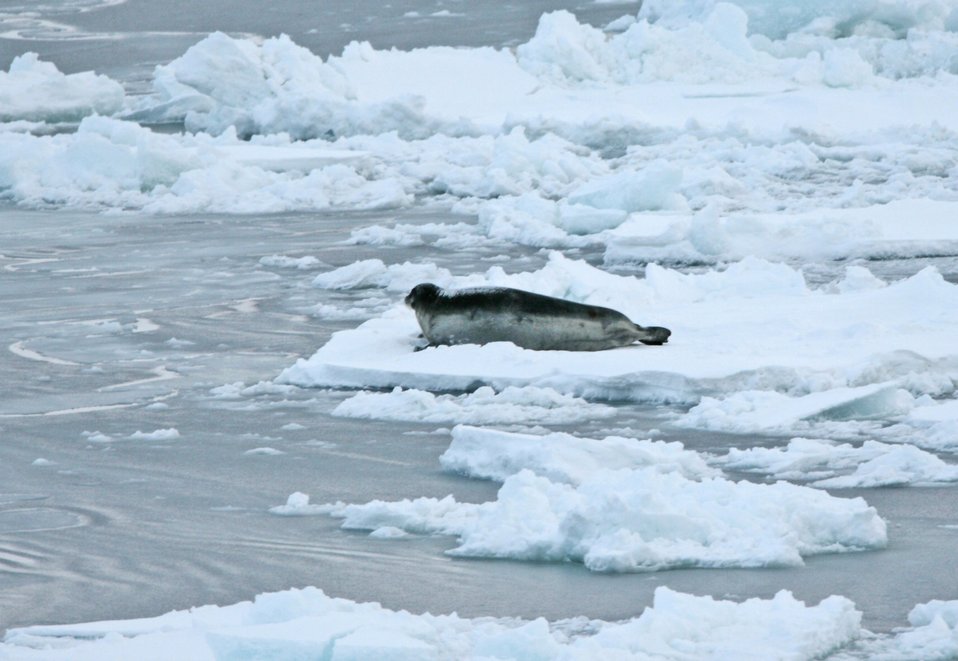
A bearded seal (Erignathus barbatus) on the ice. Bearded seals are the largest of Arctic seals and are named for their bushy whiskers which form a sensory moustache.